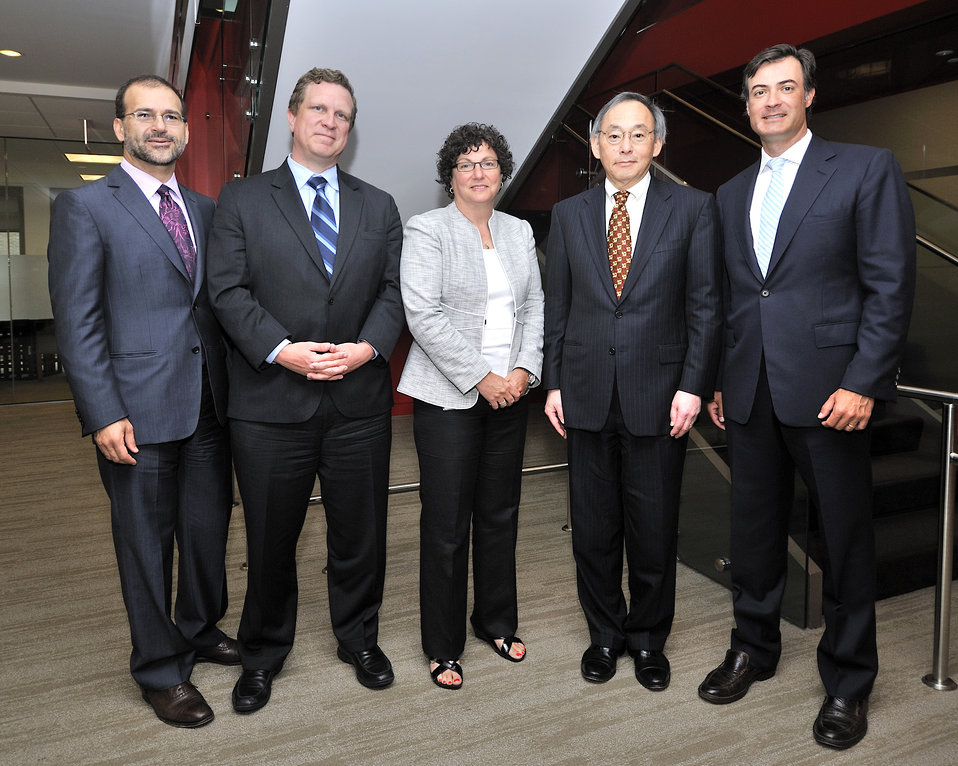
National Clean Energy Business Plan Competition

The National Clean Energy Business Plan Competition inspired nearly 300 university teams across the country to create new businesses to commercialize promising energy technologies developed at U.S. universities and the National Laboratories.